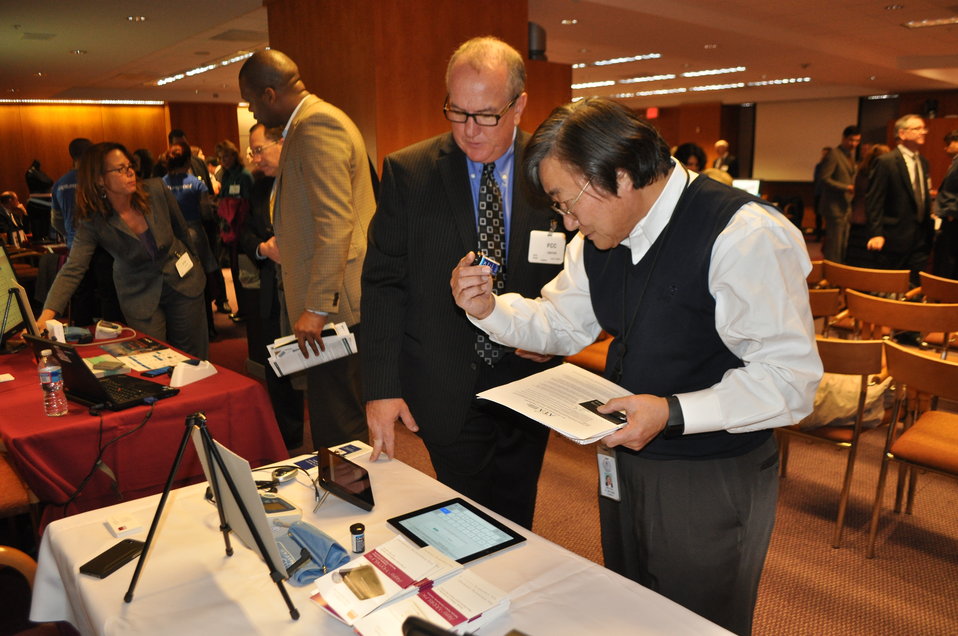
12.6.13 mHealth Innovation Expo

FCC mHealth Innovation Expo.